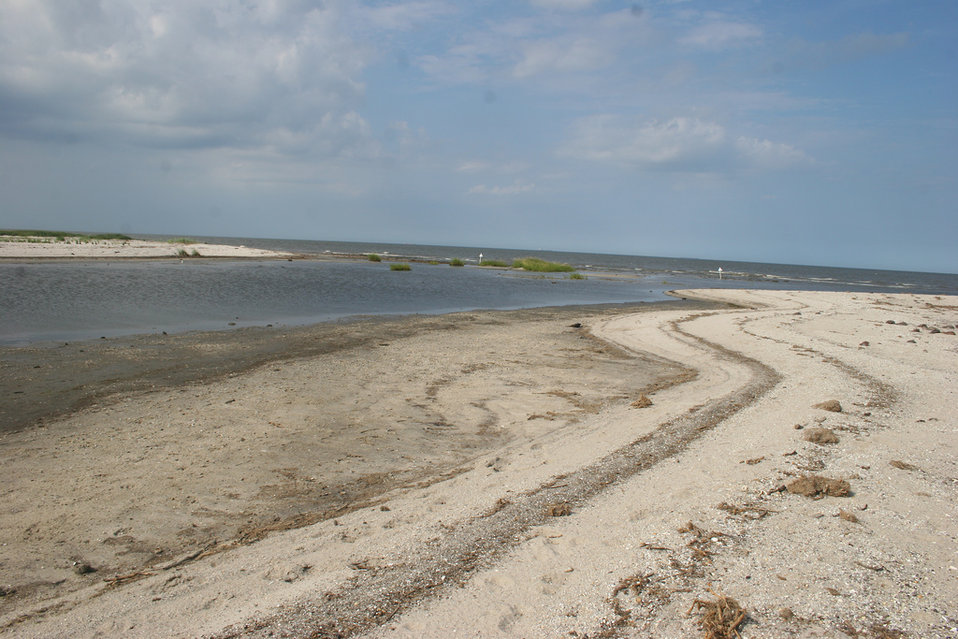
Beach at Prime Hook NWR

Beach at Prime Hook National Wildlife Refuge, De.